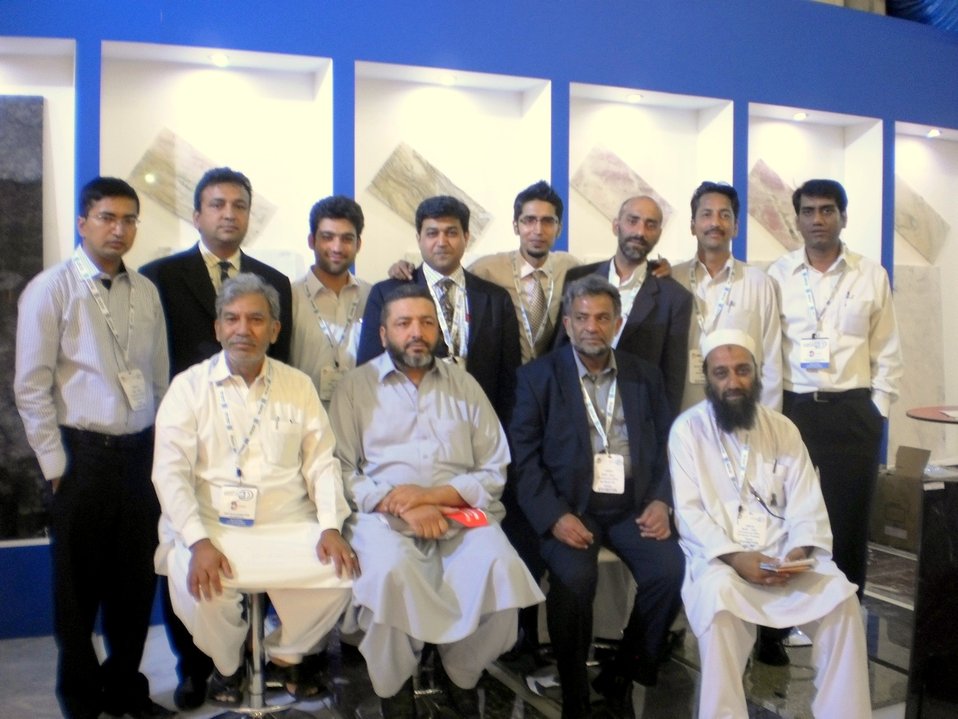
USAID Firms Project Marble and Granite sector participates in the BIG 5, largest construction show of Saudi Arabia

The project facilitated the participation of 11 representatives from the marble processing and mosaic manufacturing businesses based in district Peshawar, Charsadda, Islamabad, Sheikhupura and Karachi, at the BIG 5, which is the largest building and construction show of Saudi Arabia